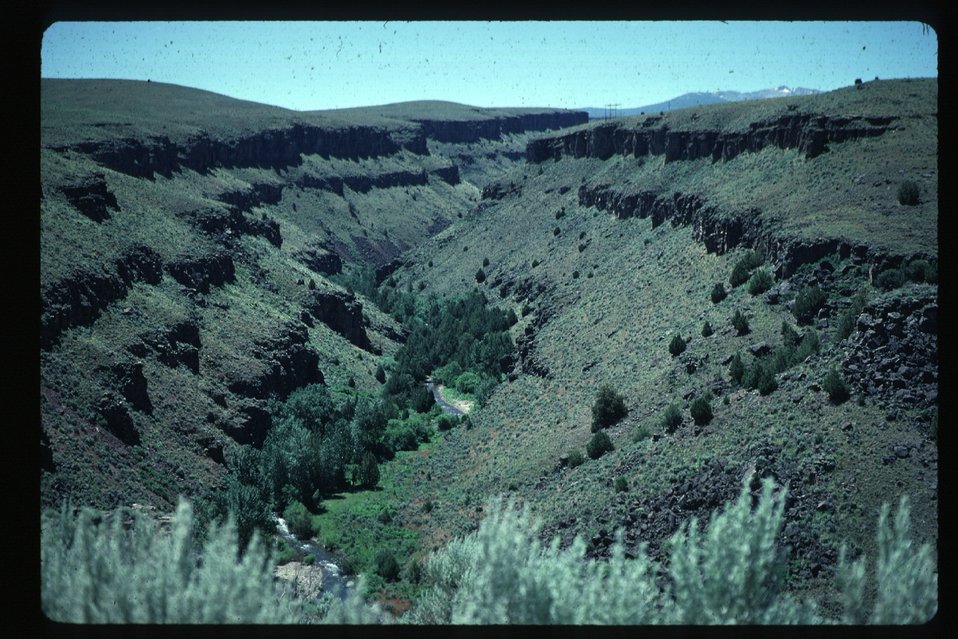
Scenic Bruneau River Overlook Owyhee Field Office LSRD Lower Snake River District